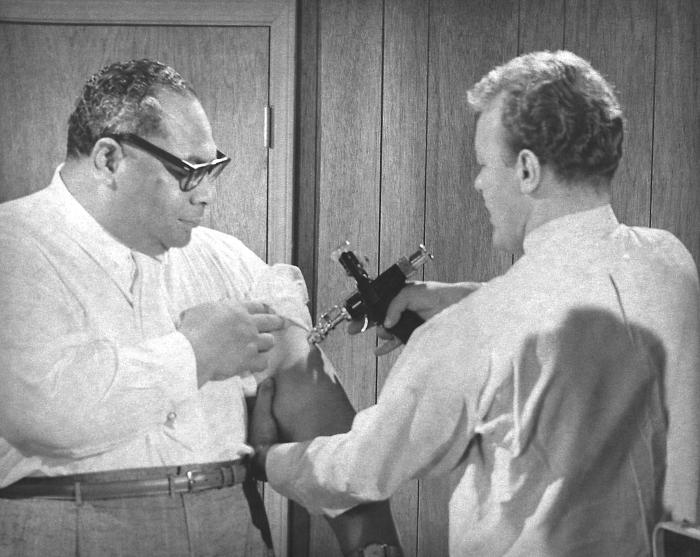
At the time of this photograph, Prince Taufa'ahau Tupou IV of Tonga (who was soon to become King of Tonga), was shown here as he received his smallpox vaccination at the Centers for Disease Control (CDC), as the administrator, Ron Roberto, M.D. used a Ped-O-Jet� to administer the vaccine.